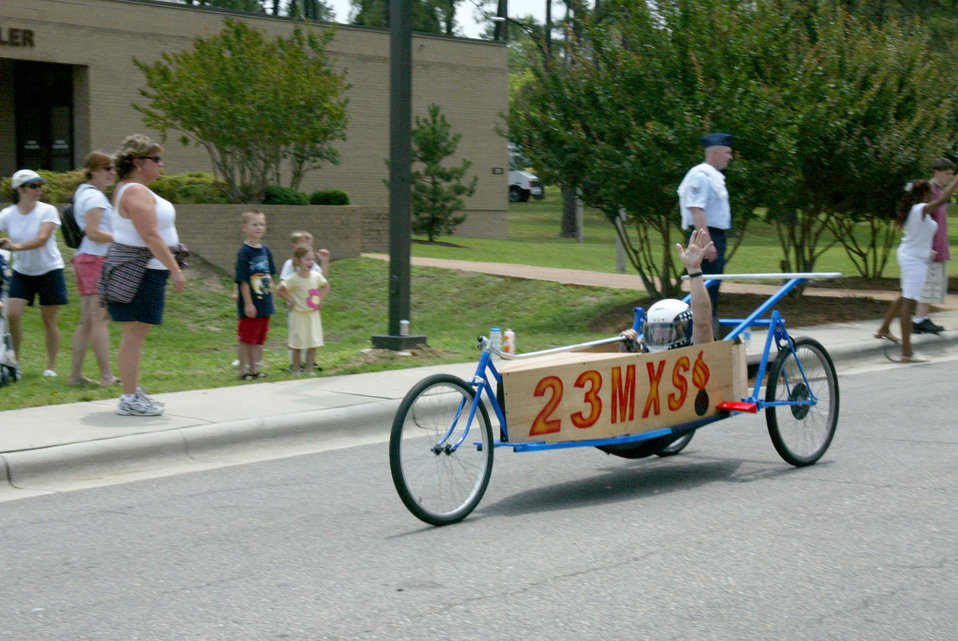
On his soap box

POPE AIR FORCE BASE, N.C. -- Master Sgt. Steve Hammonds shares his excitement with the crowd after learning that he would be advancing to the final race during the Pope Box Derby here recently. He is assigned to the 23rd Maintenance Squadron.